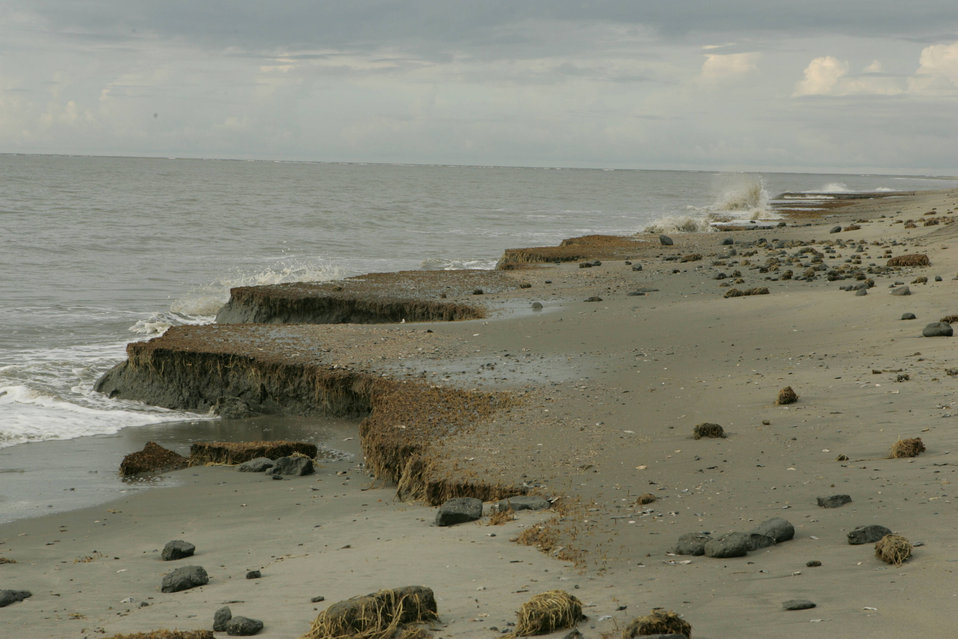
Beach erosion

Photo credit: USFWS/Steve Hillebrand

As water warms, it expands, and the ocean surface rises. Sea level rise is highly variable regionally and local sea level rise is affected by multiple factors, including local geography and geology, such as rising or sinking land. Additional sea level rise is caused by the melting of inland glaciers and continental ice sheets, including those in Greenland and Antarctica.